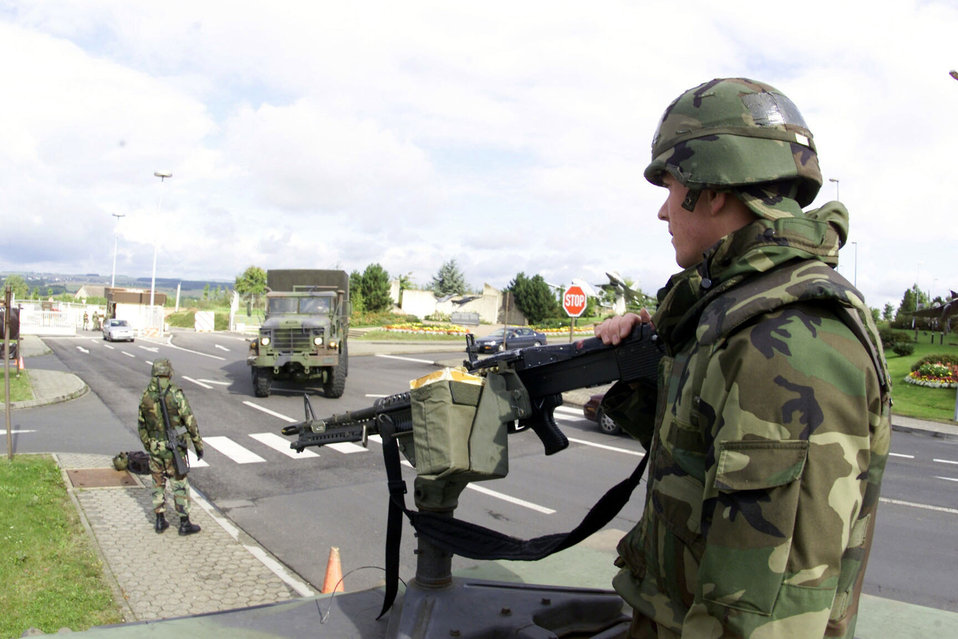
Controlled entry

SPANGDAHLEM AIR BASE, Germany -- Senior Airman Jeremy Rae of the 52nd Fight Wing, 606th Air Control Squadron, overwatches the main gate in his Humvee here. Increased security measures followed the Sept. 11 terrorist attacks in New York City and at the Pentagon in Washington, D.C.